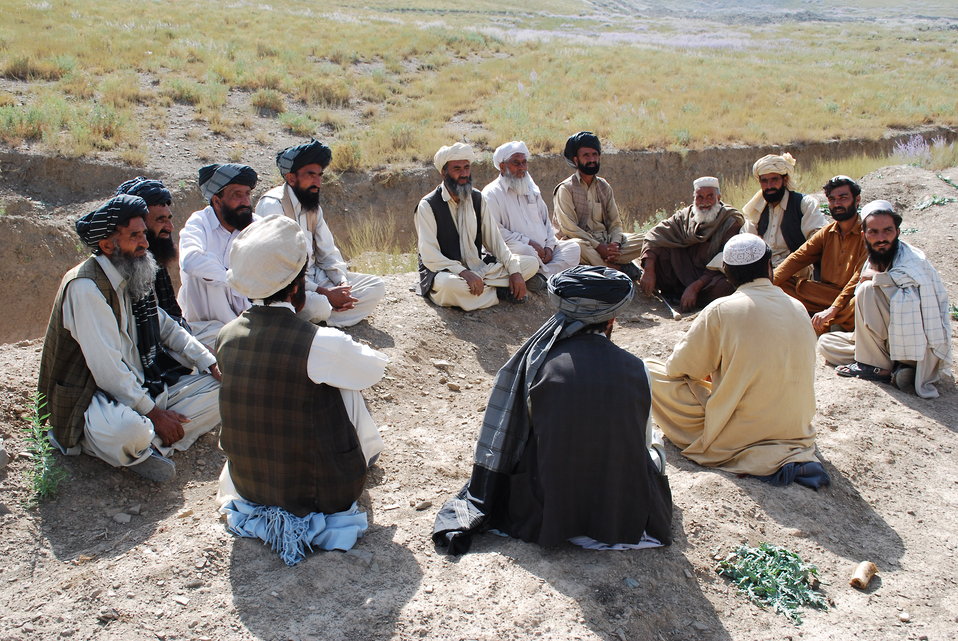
'On the Road' in Paktya Province